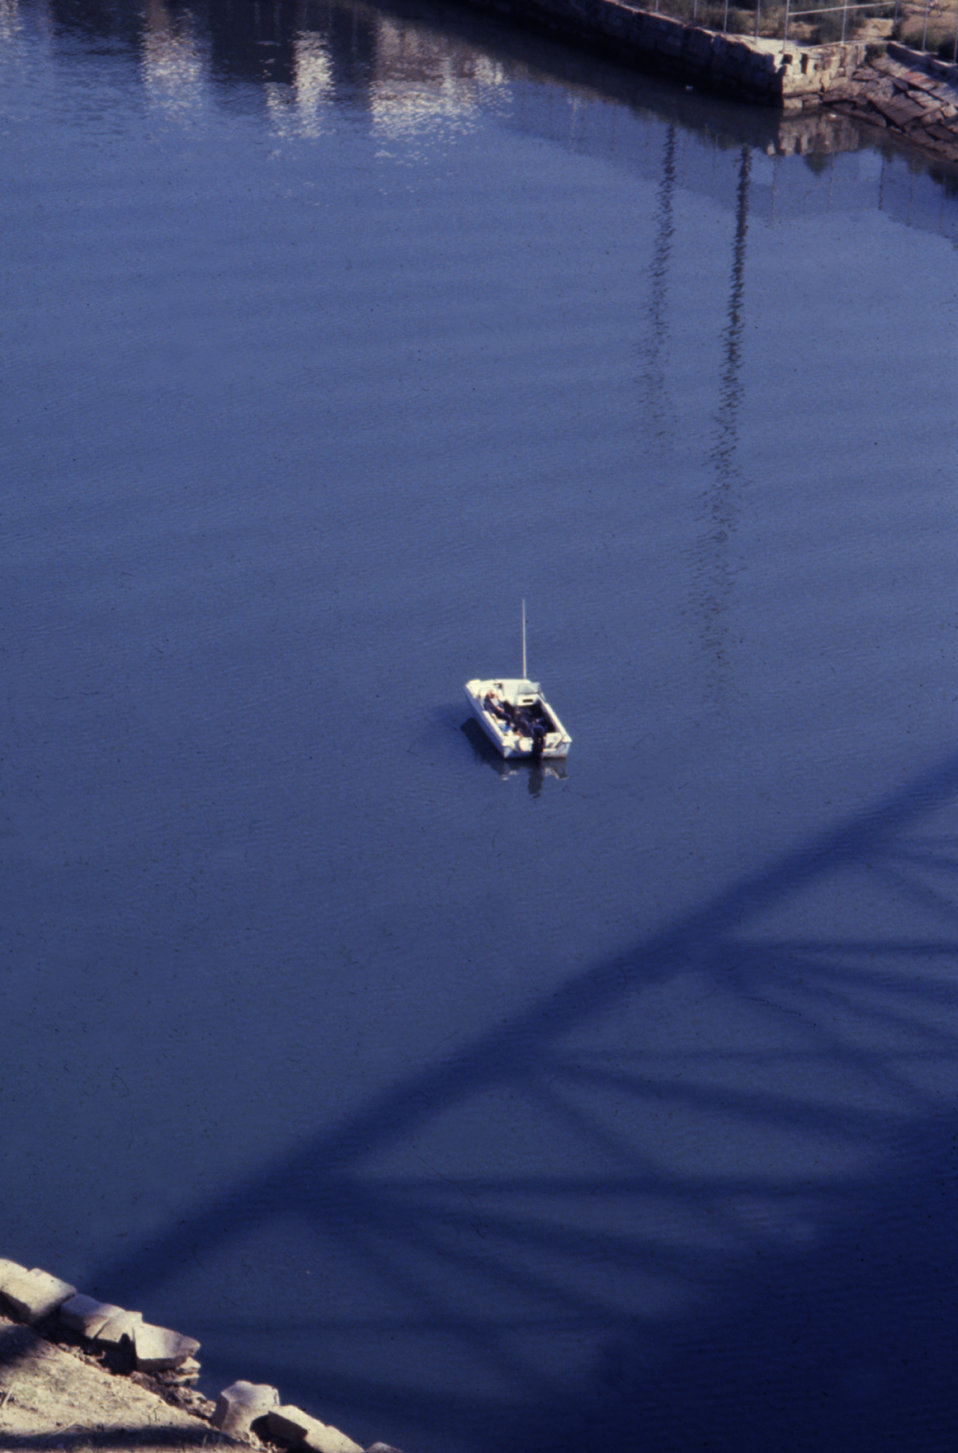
In 1980, the Boston, MA Tobin Bridge, shed flakes of lead-based paint onto subjacent neighborhoods, and the Mystic River below.